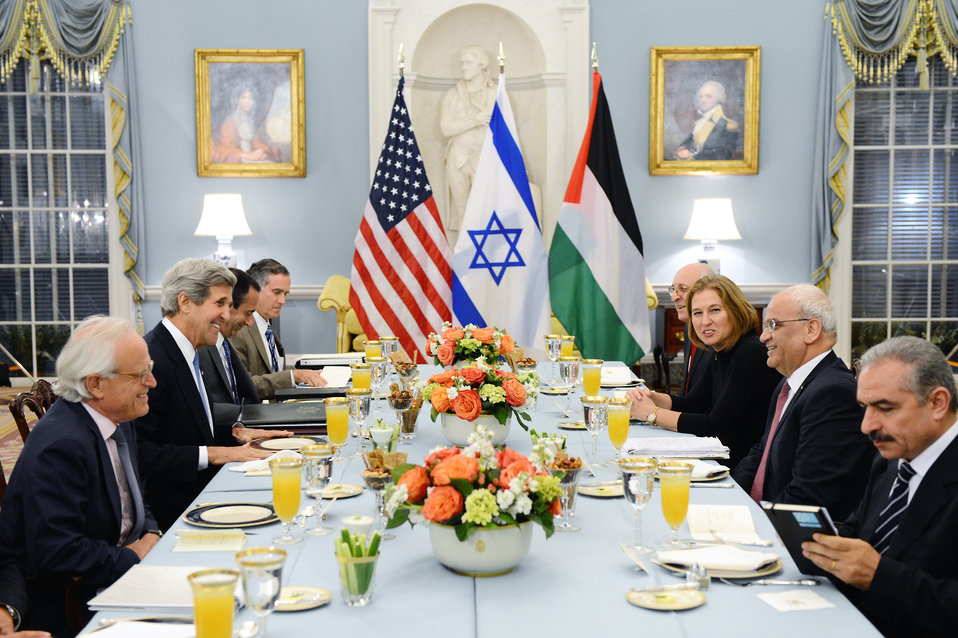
Secretary Kerry Hosts an Iftar for the Israeli Justice Minister Livni and Palestinian Chief Negotiator Erekat

U.S. Secretary of State John Kerry hosts an Iftar for Israeli Justice Minister Tzipi Livni and Palestinian chief negotiator Saeb Erekat at the U.S. Department of State in Washington, D.C., on July 29, 2013.